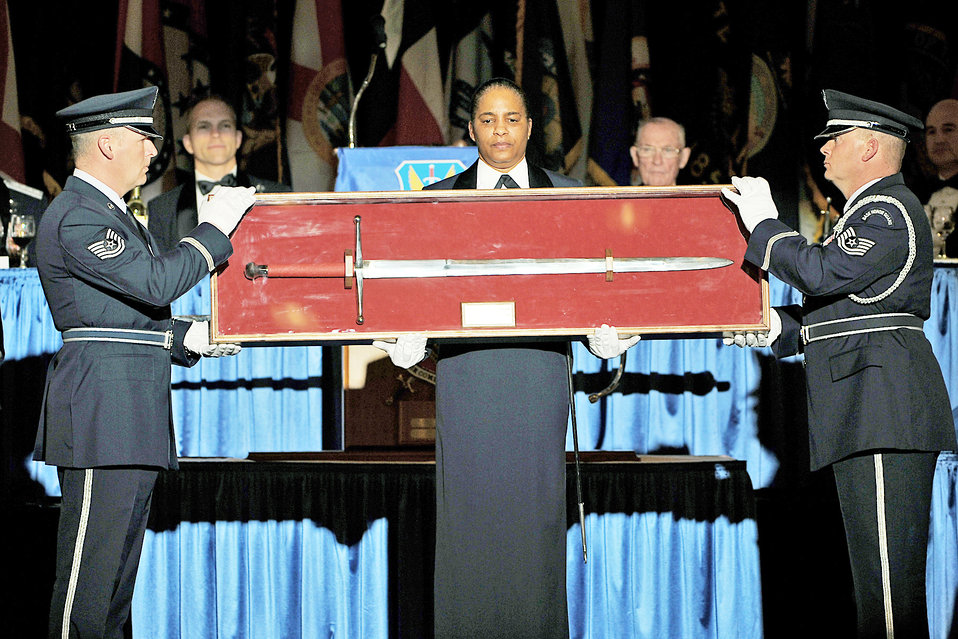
Order of the Sword

Tech. Sgt. Chris Ellis, Chief Master Sgt. Shelina Frey and Tech. Sgt. Troy Bizzack present the sword during the Air Combat Command Order of the Sword ceremony Jan. 13, 2010 in Omaha, Neb. The honor was established by the Air Force enlisted corps to recognize and honor senior officers (colonels or above) and civilian equivalents. Sergeant Ellis is the base honor guard superintendent at Dyess Air Force Base,Texas. Sergeant Bizzack is the honor guard NCO in charge at Holloman AFB, N.M.